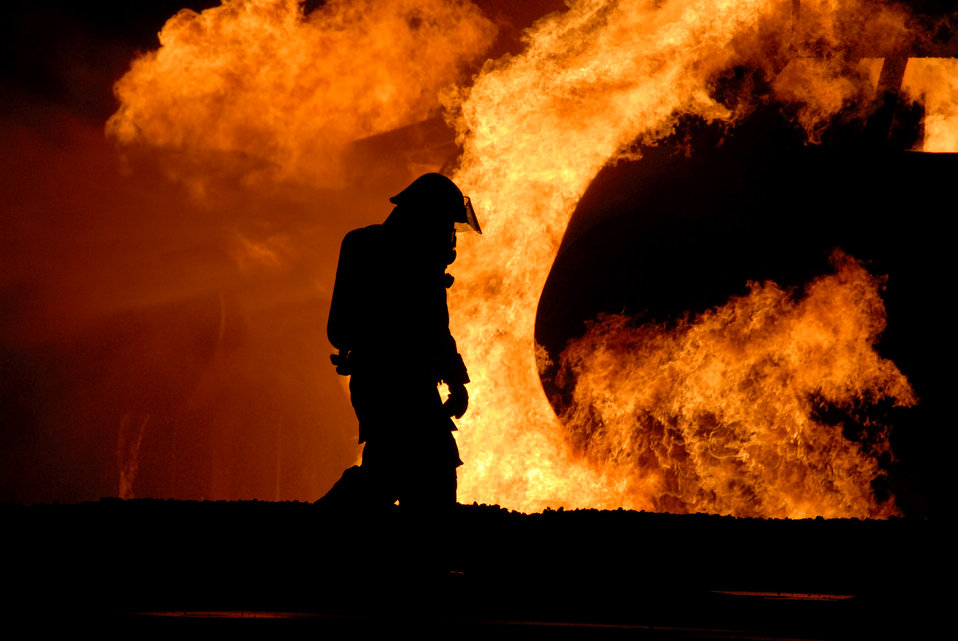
Blazing demonstration

A firefighter from the 35th Civil Engineer Squadron works to put out a blaze on an aircraft fire trainer during Fire Prevention Week Oct. 9 at Misawa Air Base, Japan. The 35th CES firefighters annually demonstrate firefighting procedures for base residents.